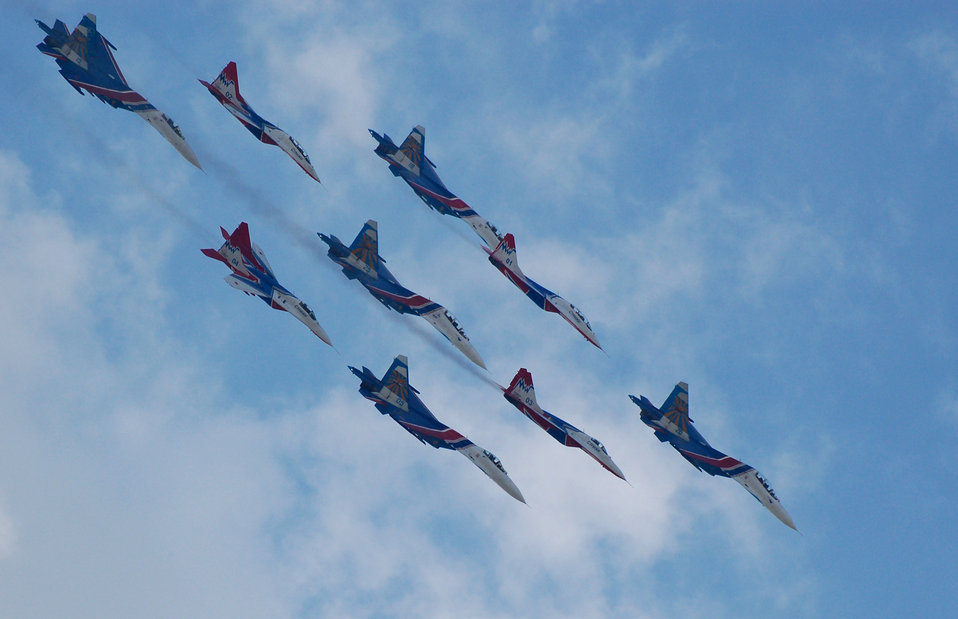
'The Big Nine' - flight groups 'Russian Knights' and 'Strizhi' (the international aerospace salon MAKS-2007) Русский: «Большая девятка» — пилотажные группы «Русские витязи» и «Стрижи» (международный авиакосмический салон МАКС-2007)